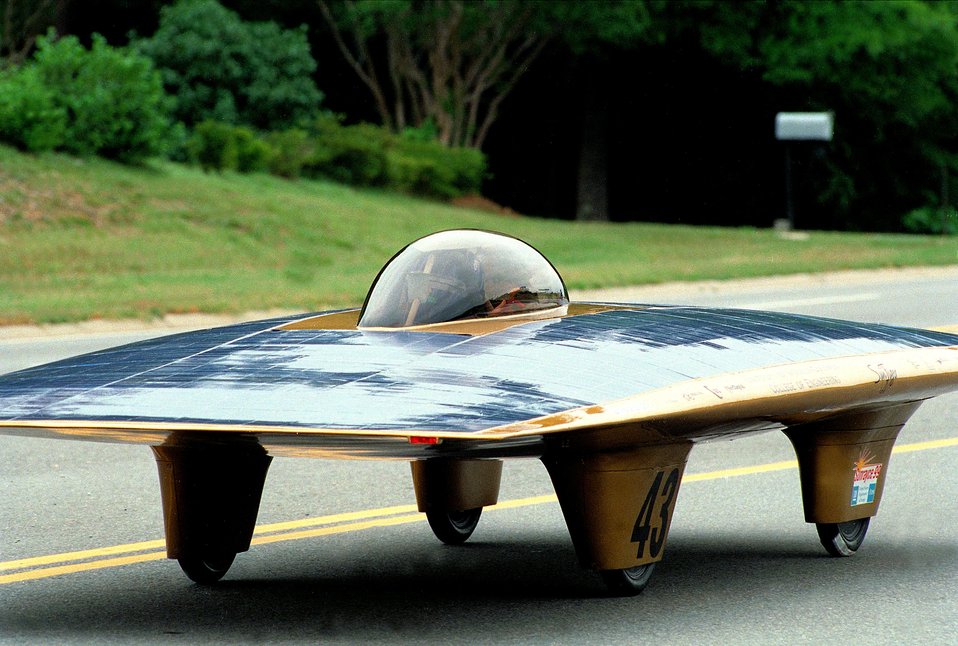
SOLAR CAR ON THE ROAD DURING SUNRAYCE 1999.

SUNRAYCE 1999 STARTED IN WASHINGTON, DC, JUNE 20, 1999 AND WAS COMPLETED ON JUNE 29, 1999 AT DISNEY WORLD IN FLORIDA. DOE HELPS TO SPONSOR THE SUNRAYCE AS PART OF ITS COMMITMENT TO RESEARCH AND DEVELOPMENT OF CLEAN , COST EFFECTIVE, ENERGY EFFICIENT RENEWABLE ENERGY. THE SUNRAYCE BRINGS TOGETHER TEAMS OF STUDENTS FROM A WIDE RANGE OF DISCIPLINES, INCLUDING ENGINEERING, COMPUTER SCIENCE, PHYSICS, MARKETING AND GRAPHICS. STUDENTS MUST DESIGN, CONSTRUCT AND RACE THEIR SOLAR-POWERED VEHICLES, WITH FACULTY ACTING ONLY IN ADVISORY CAPACITY.